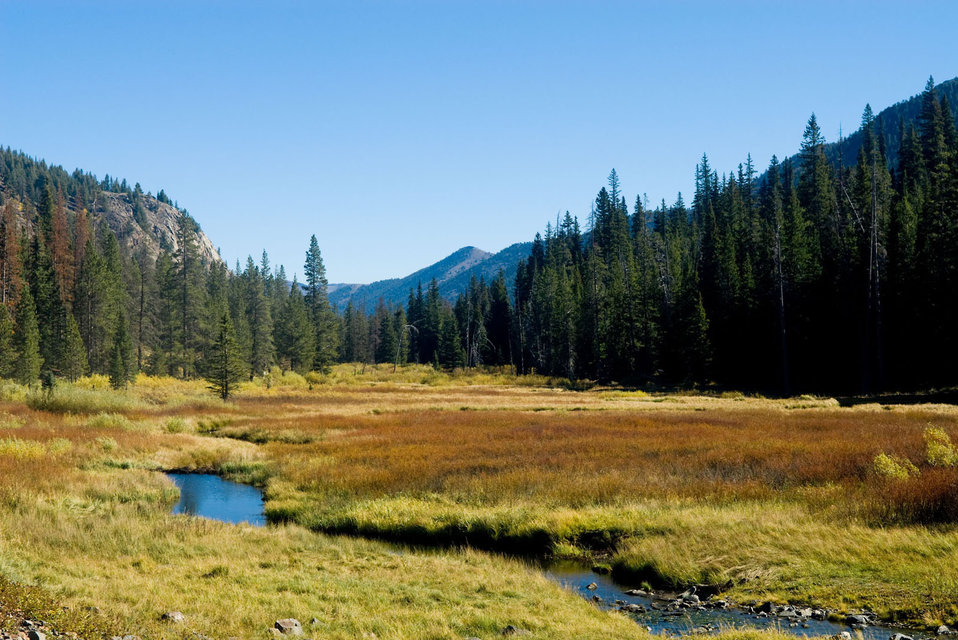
Streams are Critical for Clean Drinking Water

In the continental United States, more than 357,000 miles of streams provide water for public drinking water systems. Of that total, 58%, or more than 207,000 miles, are streams that only flow after rain or in certain times of the year. Approximately 117 million people – over one-third of the total U.S. population – get some or all of their drinking water from public drinking water systems that rely in part on these streams.